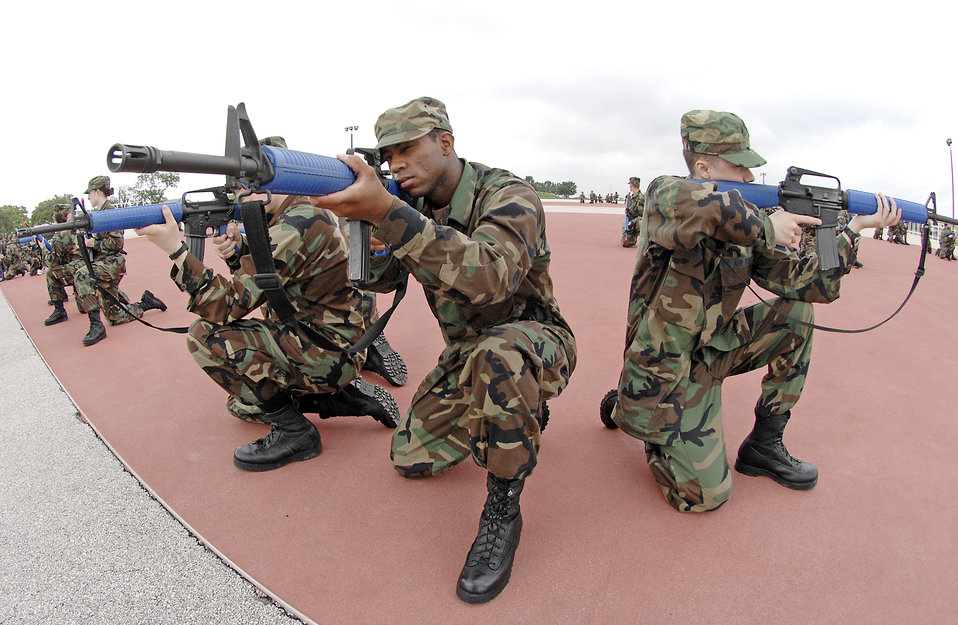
Airmen live, learn warrior ethos

Basic trainees practice techniques to establish a perimeter to defend their area of responsibility on Lackland Air Force Base, Texas on May 2. This part of instruction precedes the field training portion of basic training. Here trainees using proper voice and posture to properly defend a perimeter.